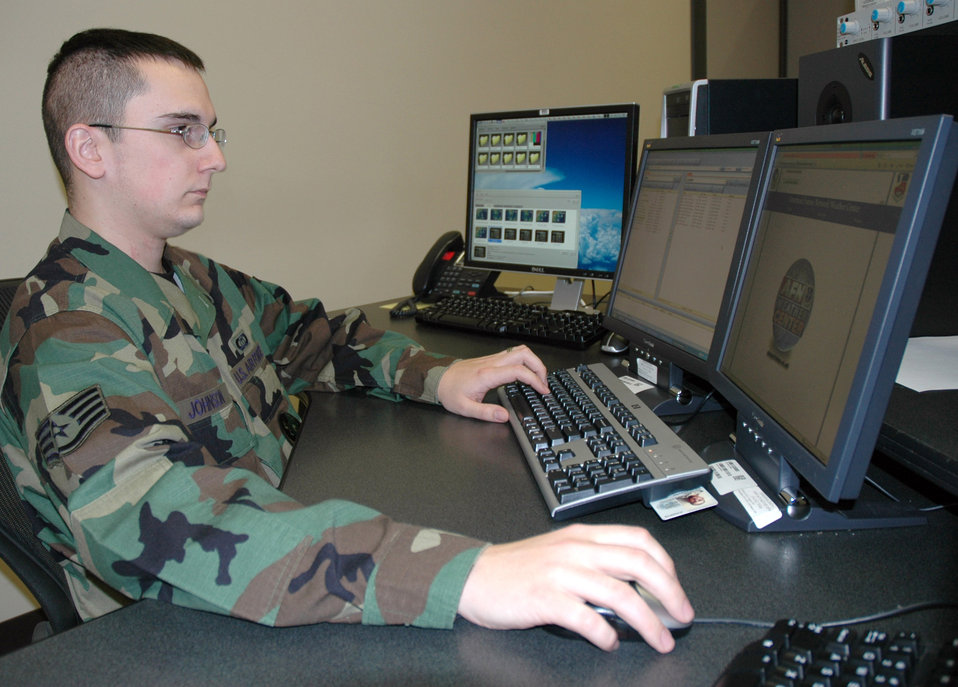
Weather-center forecasts now just a click away

Staff Sgt. Kevin Johnson, a broadcast weather technician with the American Forces Network Weather Center at Offutt Air Force Base, Neb., builds graphical animation for an upcoming AFNWC broadcast.